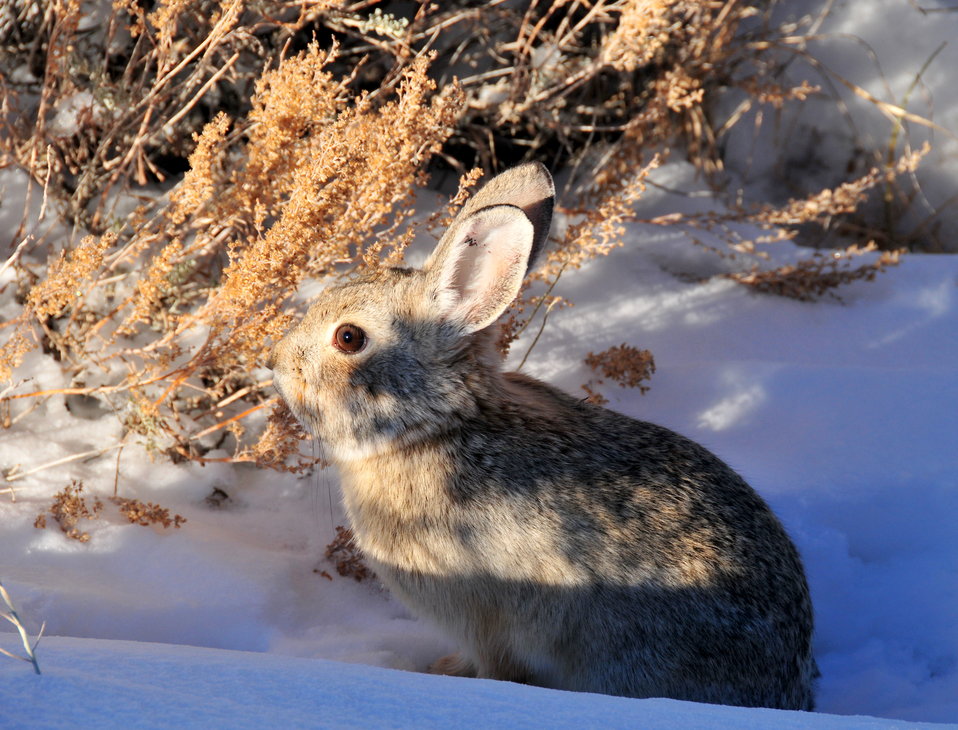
Pygmy Rabbit (Sylvilagus idahoensis) on Seedskadee NWR 01

A pygmy rabbit (Sylvilagus idahoensis) feeds on sagebrush during the winter on Seedskadee NWR